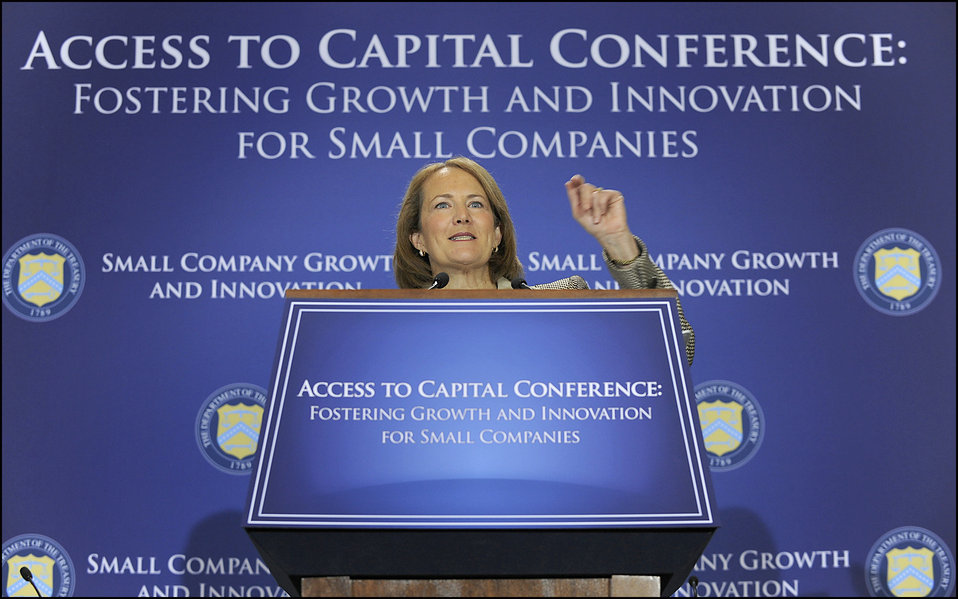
Access to Capital Conference

Small Business Administrator delivered opening remarks.